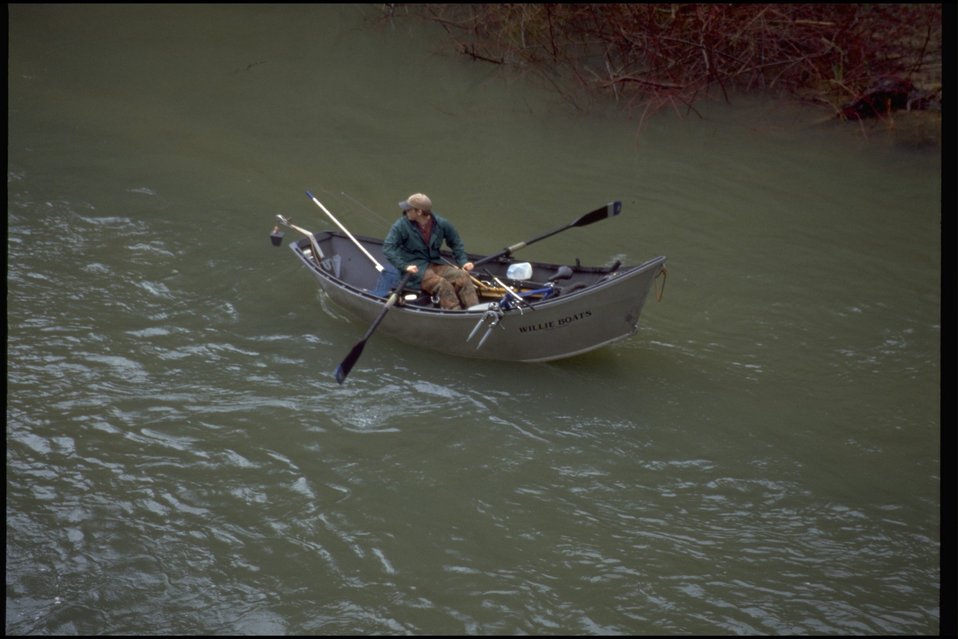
Man rowing on Whittaker Creek.